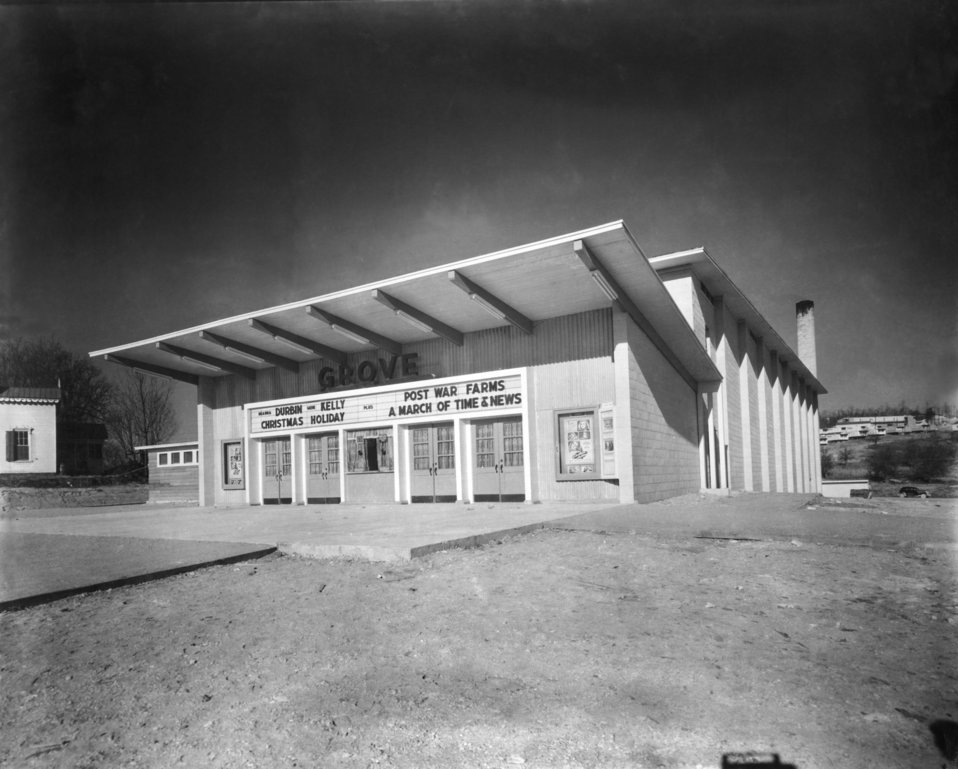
Grove Theater 1944 Oak Ridge

MED137 DOE photo Ed Westcott 1944 Oak Ridge Tennessee